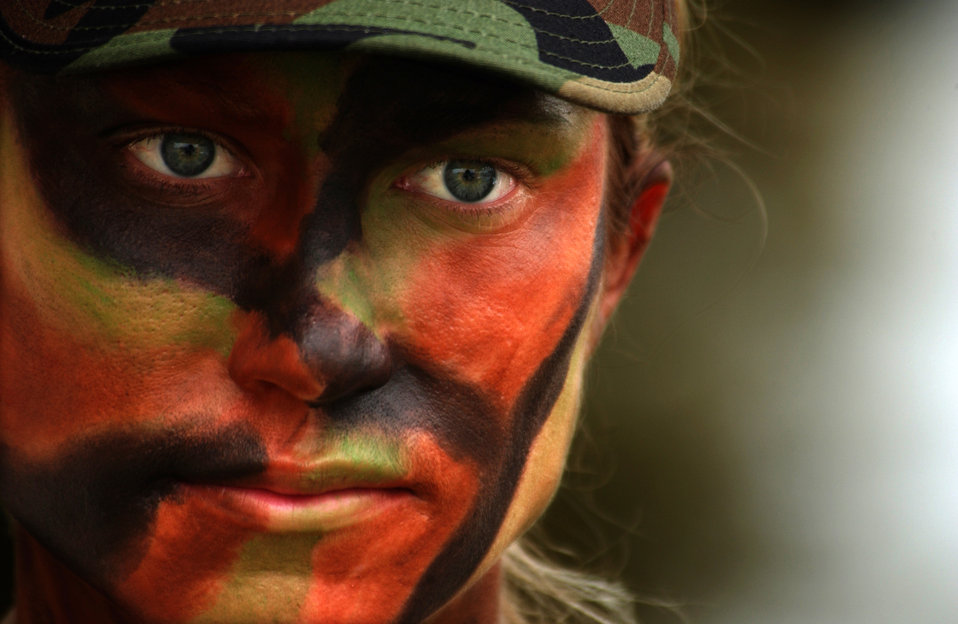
Ready for the challenge

LACKLAND AIR FORCE BASE, Texas -- Staff Sergeant Sally McCabe prepares to compete here in the combat weapons portion of Defender Challenge 2004. Defender Challenge is a security forces competition. Sergeant McCabe is assigned to the 85th Security Forces Squadron at Naval Air Station Keflavik, Iceland.